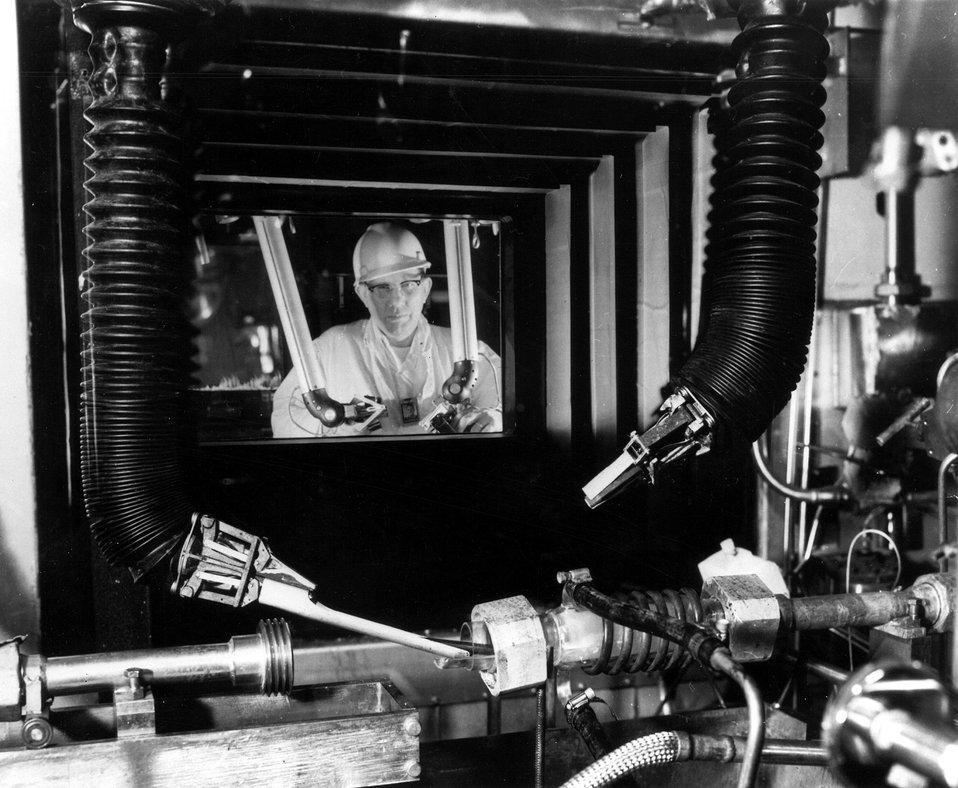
Contamination-Decontamination Experiment inside a hot cell in the Idaho Chemical Processing Plant at the U.S. Dept. of Energy's National Reactor Testing Station in Idaho. Circa 1974.